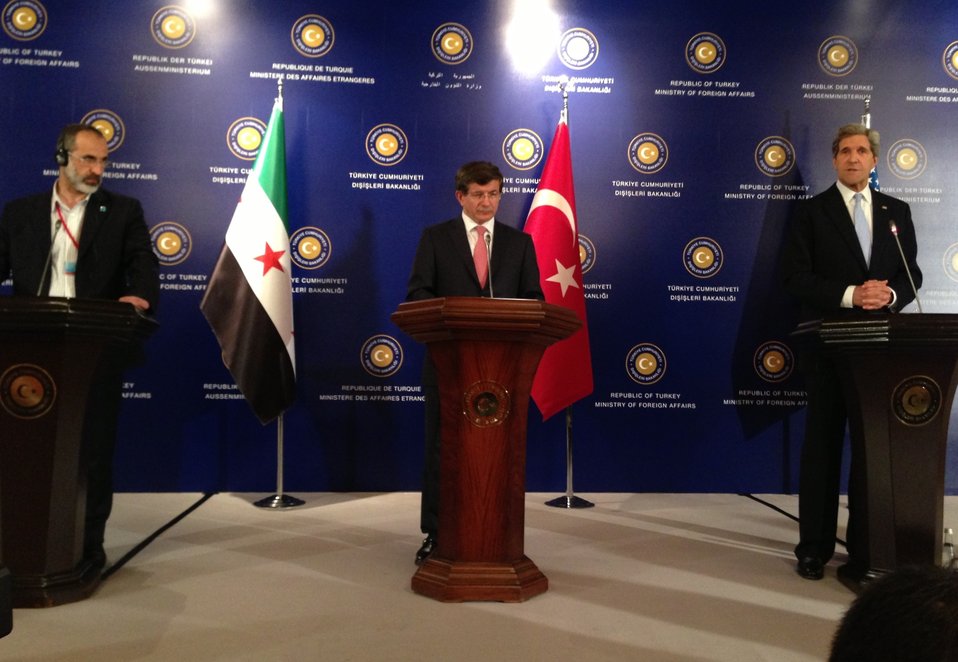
Secretary Kerry Delivers Remarks With Turkish Foreign Minister Davutoglu and Syrian Opposition Council Chairman al-Khatib

U.S. Secretary of State John Kerry delivers remarks with Turkish Foreign Minister Ahmet Davutoglu and Syrian Opposition Council Chairman Moaz al-Khatib in Istanbul, Turkey on April 20, 2013.